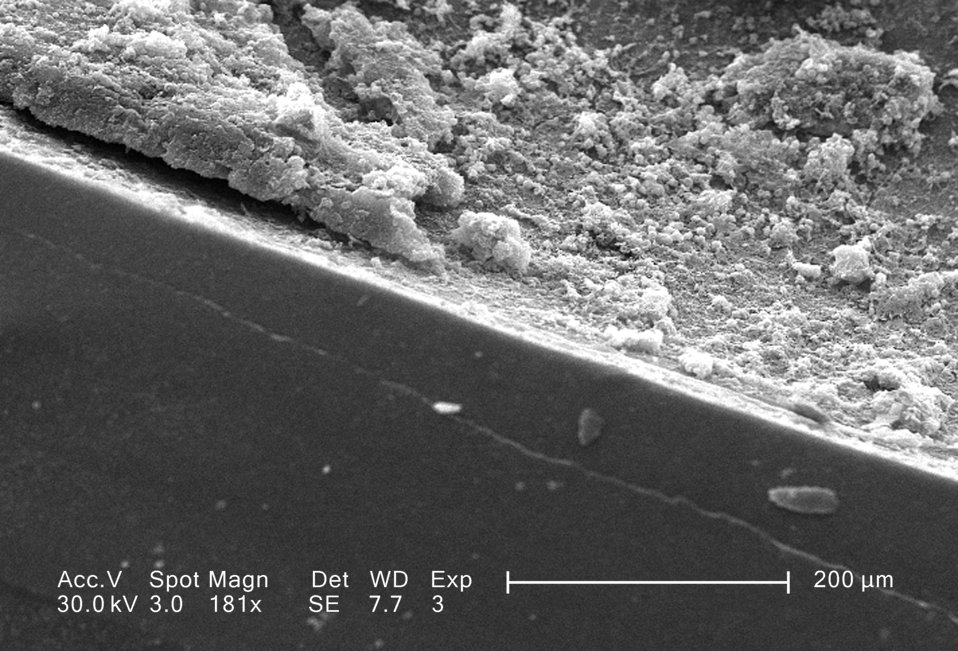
This scanning electron micrograph (SEM) depicted the accumulations of a fibrinous meshwork seen upon the luminal, i.e., inner surface of an indwelling vascular catheter; Magnified 181x. In this instance, the indwelling catheter was a tube that was left in place creating a patent portal directly into a blood vessel.